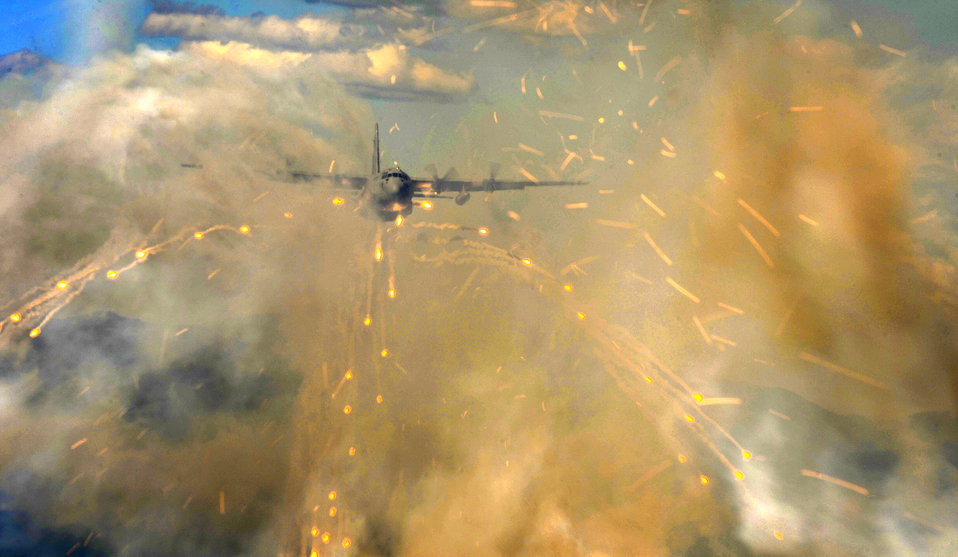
Light up the sky

A 36th Airlift Squadron C-130H Hercules from Yokota Air Base, Japan, deploys flares over Alaska as part of a training exercise during Red Flag Alaska 10-3, June 23, 2010.